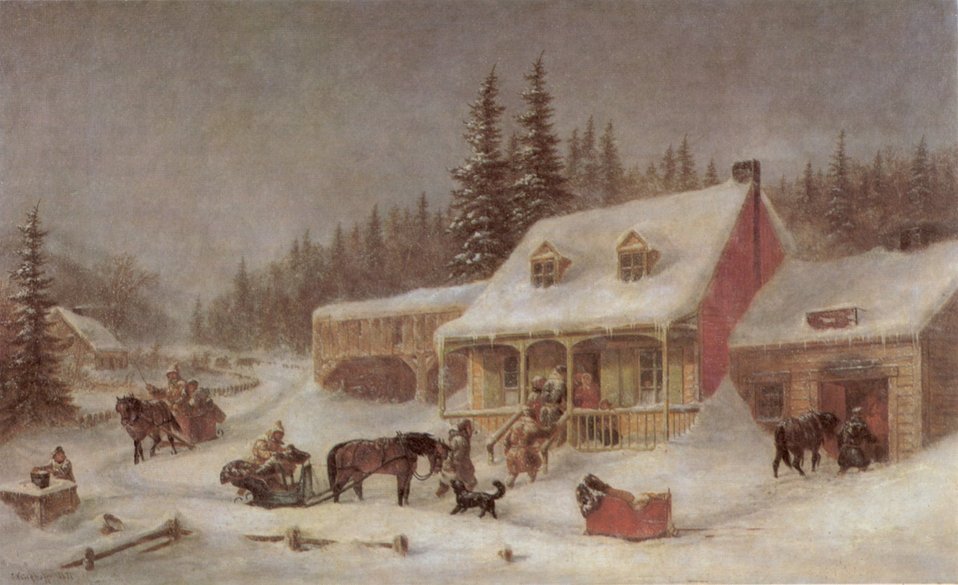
'The Blacksmith's Shop', oil on canvas painting by Cornelius Krieghoff, 22 x 36 in, 1871, Art Gallery of Ontario